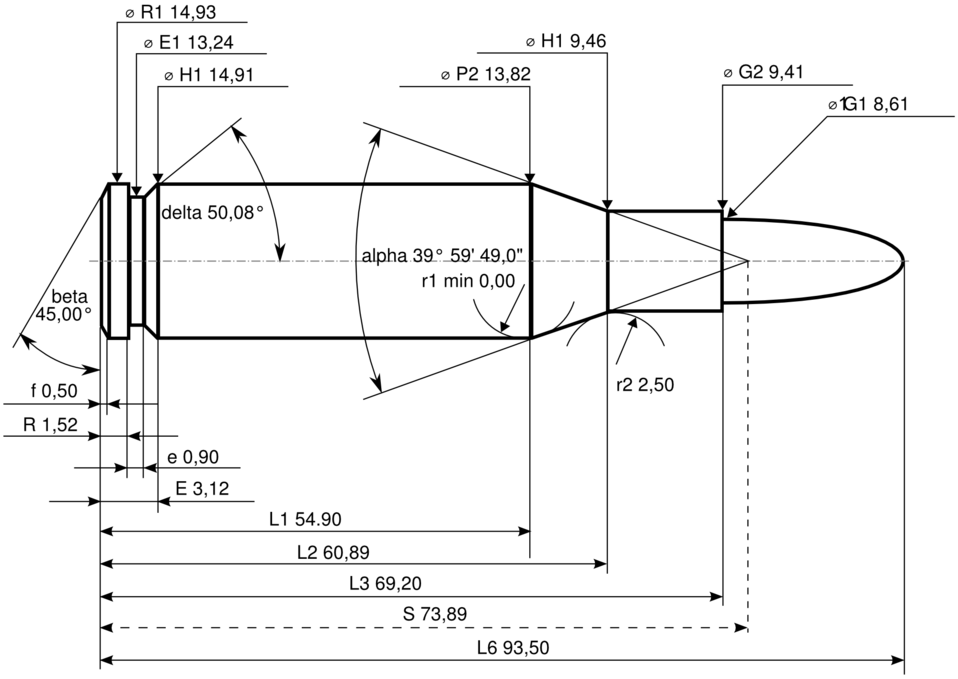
SVG version of Image:.338 Lapua Magnum